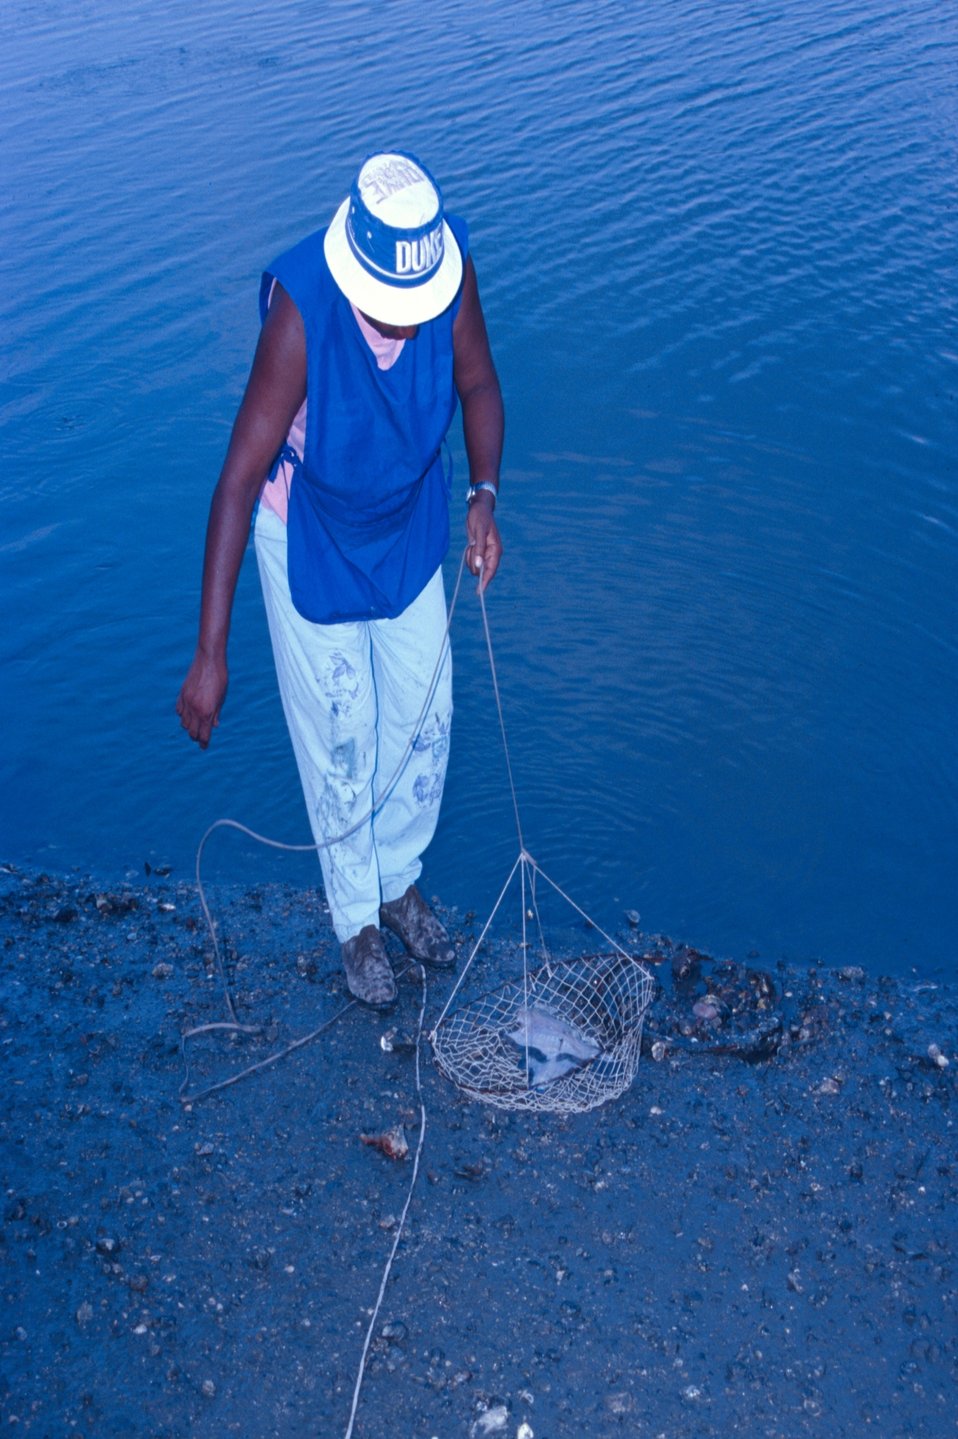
A South Carolina woman checks her bait in a simple lift net designed for taking blue crabs.